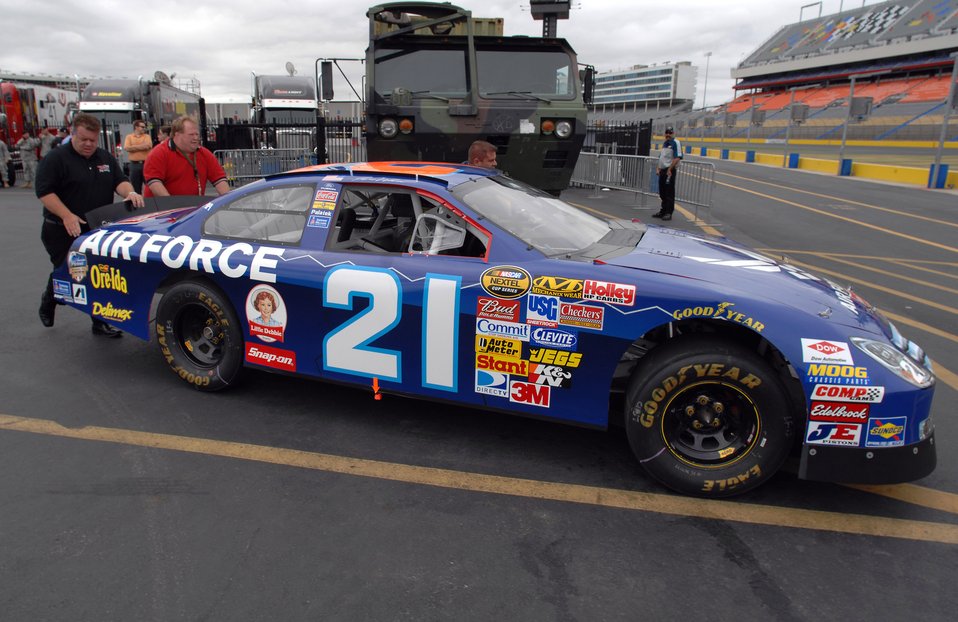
NASCAR salutes Air Force

The U.S. Air Force's NASCAR No. 21, driven by Jon Wood, is parked May 8 on display at an unveiling ceremony at Lowe's Motor Speedway in Charlotte, N.C., in recognition of